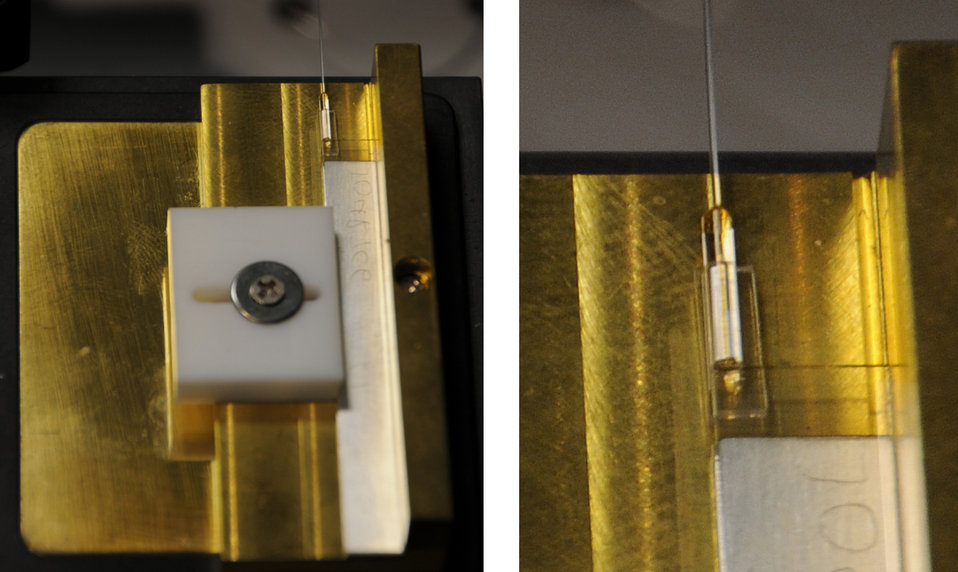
Lithium Niobate Crystal

Nearly transparent, this lithium niobate crystal (visible just above the white square section at bottom right of righthand photo) is capable of splitting a beam of photons into two beams of two different colors, an innovation that may help send quantum information through fiber optic cables, one of which is attached to the crystal at its top left corner and extends straight upward to the top of the photo frame.